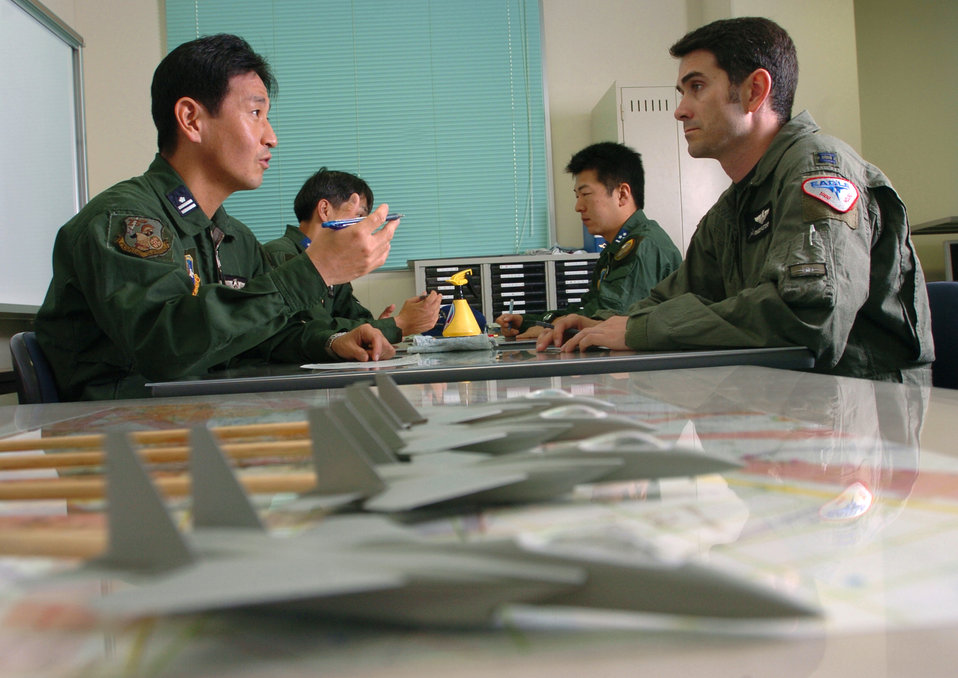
Air Force aviator strengthens U.S.-Japan friendship, ties

NYUTABARU AIR BASE, Japan -- Capt. Justin Fletcher (right) discusses tactics with Japanese Maj. Tagao Sugiyama before a mission. Captain Fletcher provides F-15 Eagle pilot techniques and counterair tactics to Japanese airmen here. He is a pilot and exchange officer assigned to the 23rd Fighter Tactical Squadron.